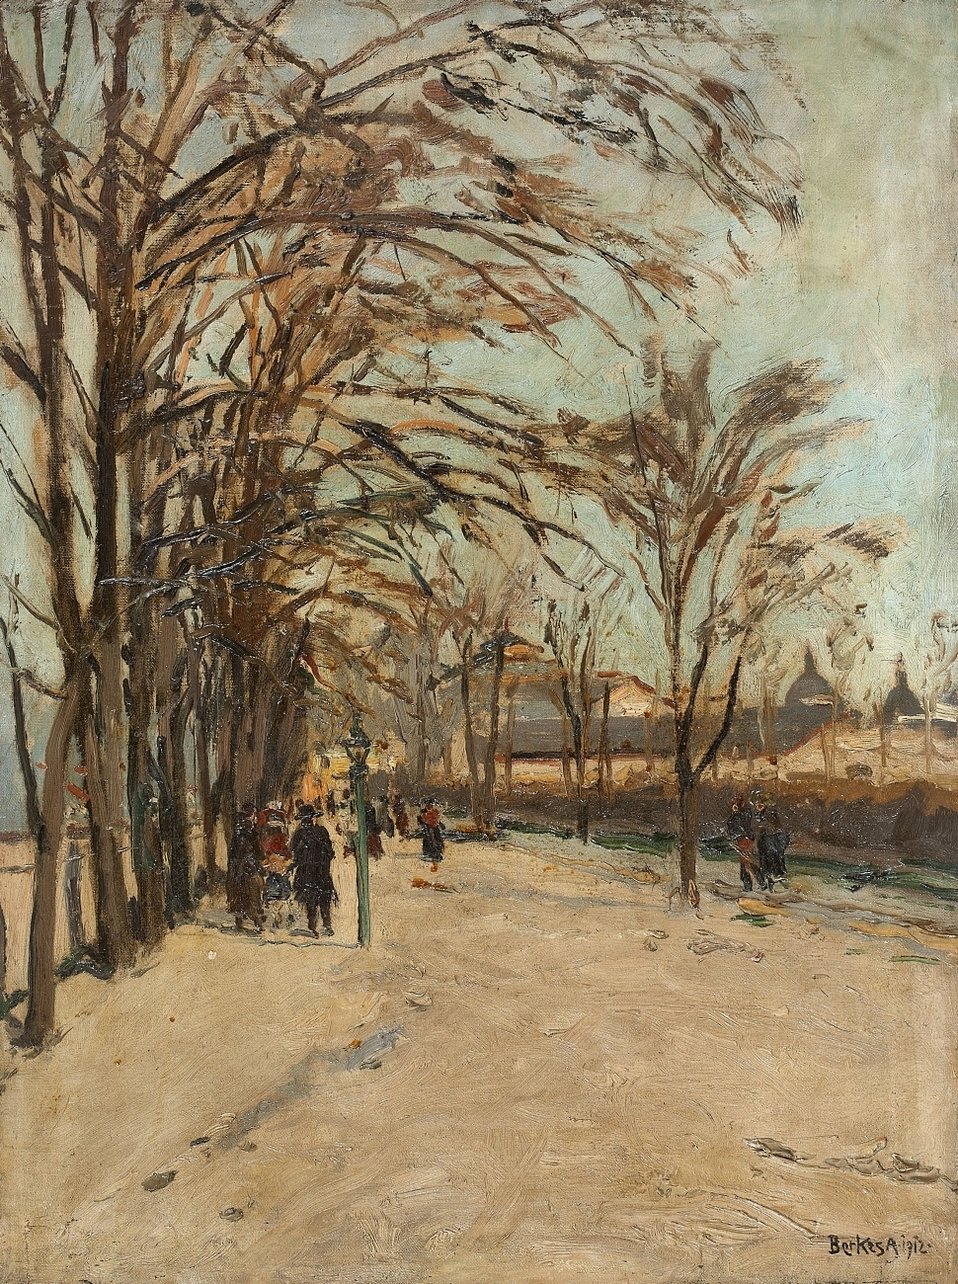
Deutsch: Spaziergänger in einer Allee. Signiert und datiert unten rechts: Berkes A. 1912. Öl auf Leinwand. 63,5 x 47 cm